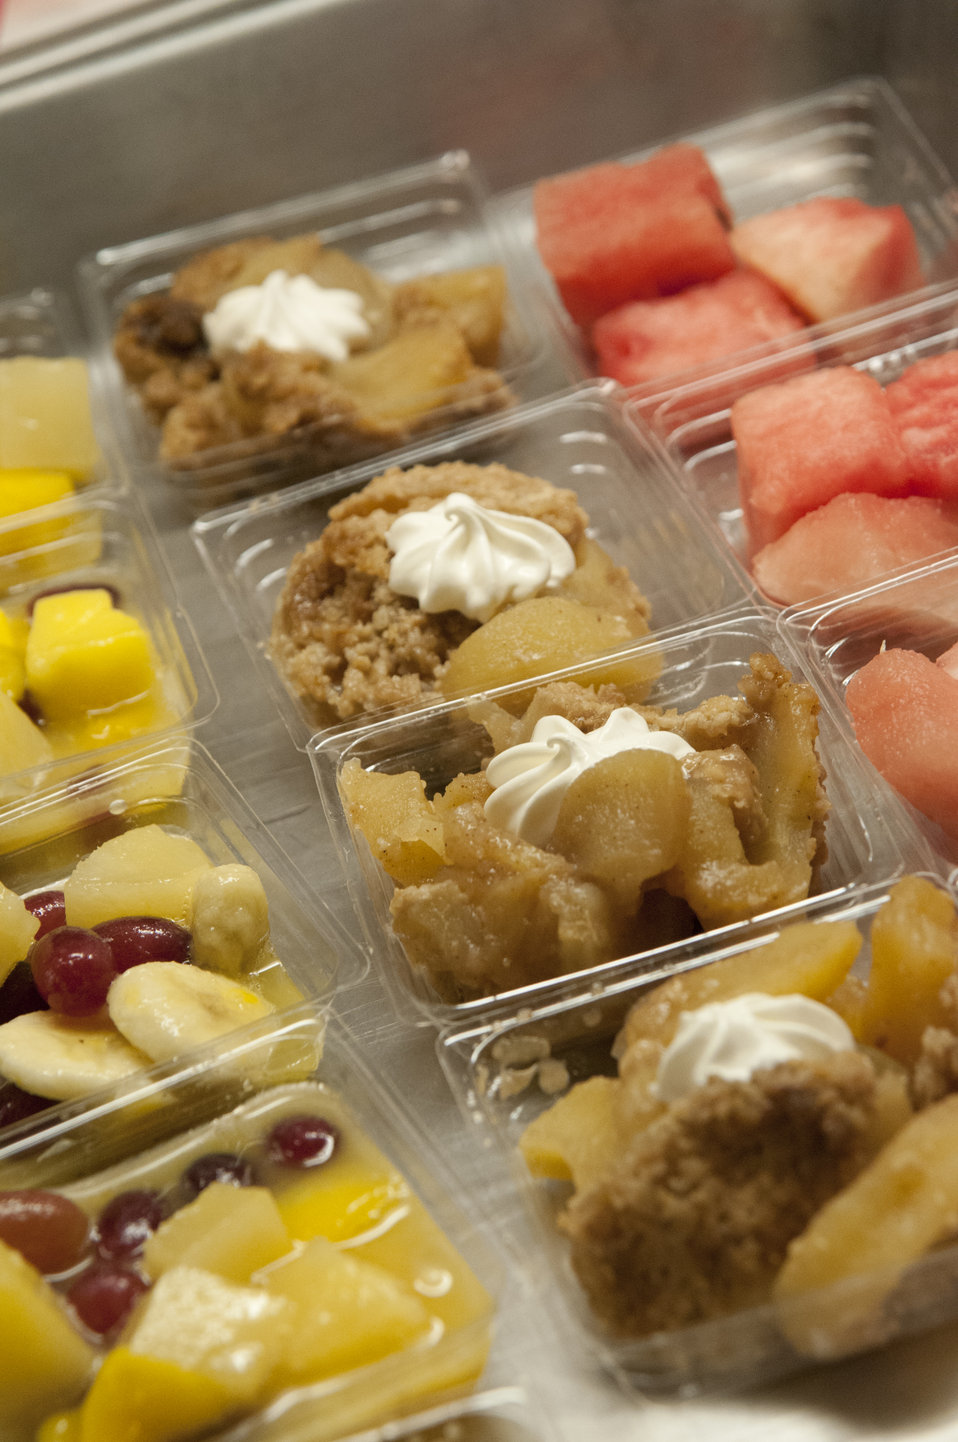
School lunch staff and students enjoy the new school lunch menu created to meet the new standards at the Yorkshire Elementary School in Manassas, VA on Friday, Sept. 7, 2012.